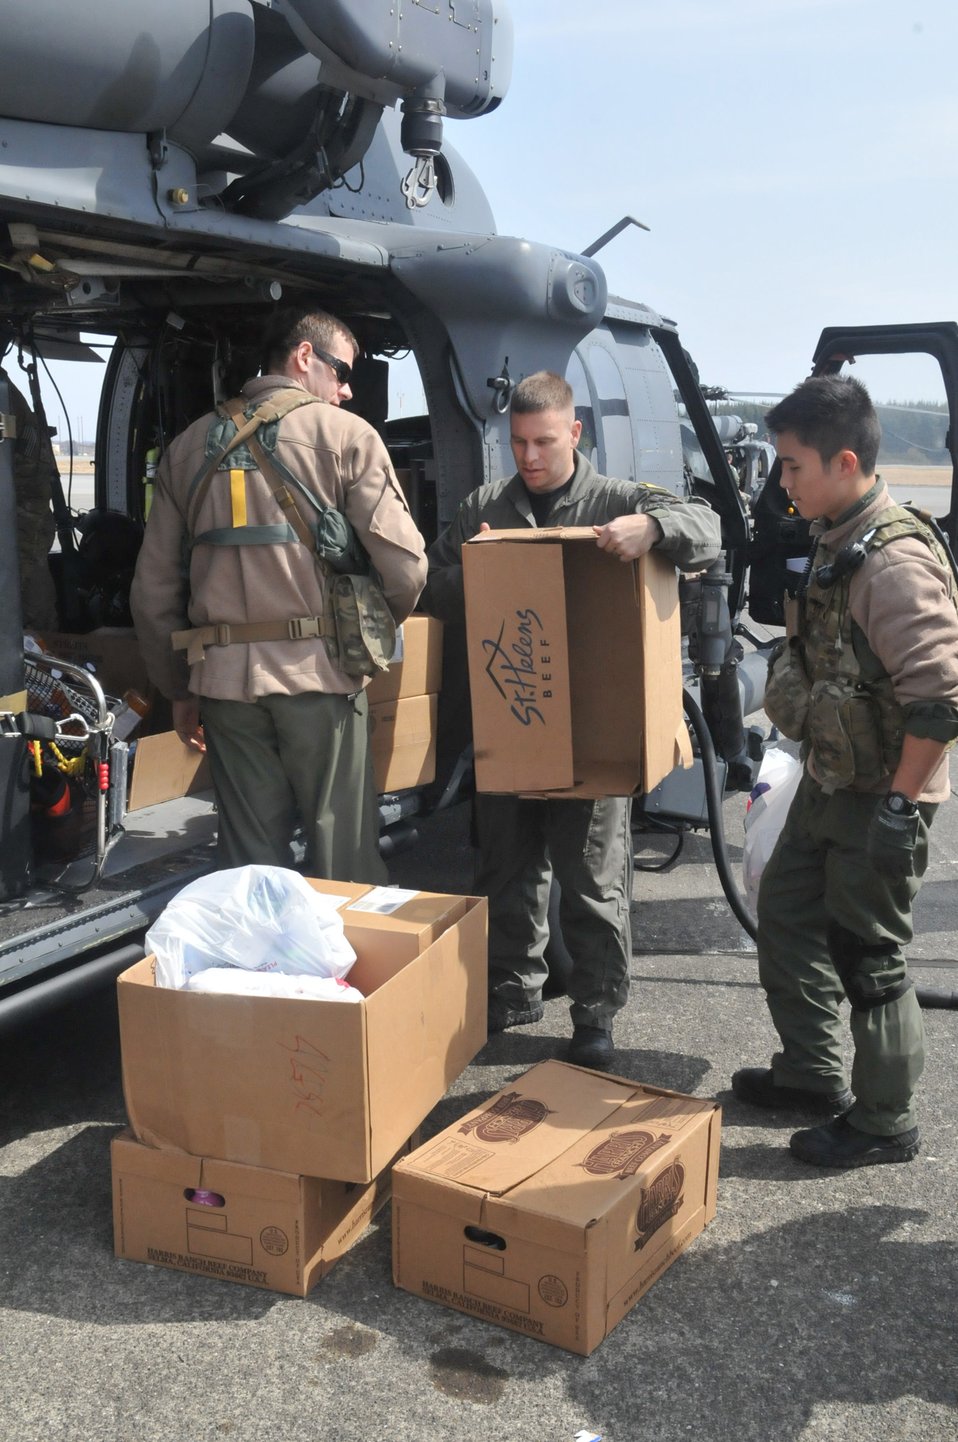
Supporting Operation Tomodachi

Airmen prepare their HH-60 Pave Hawk for takeoff March 20, 2011, at Yokota Air Base, Japan.